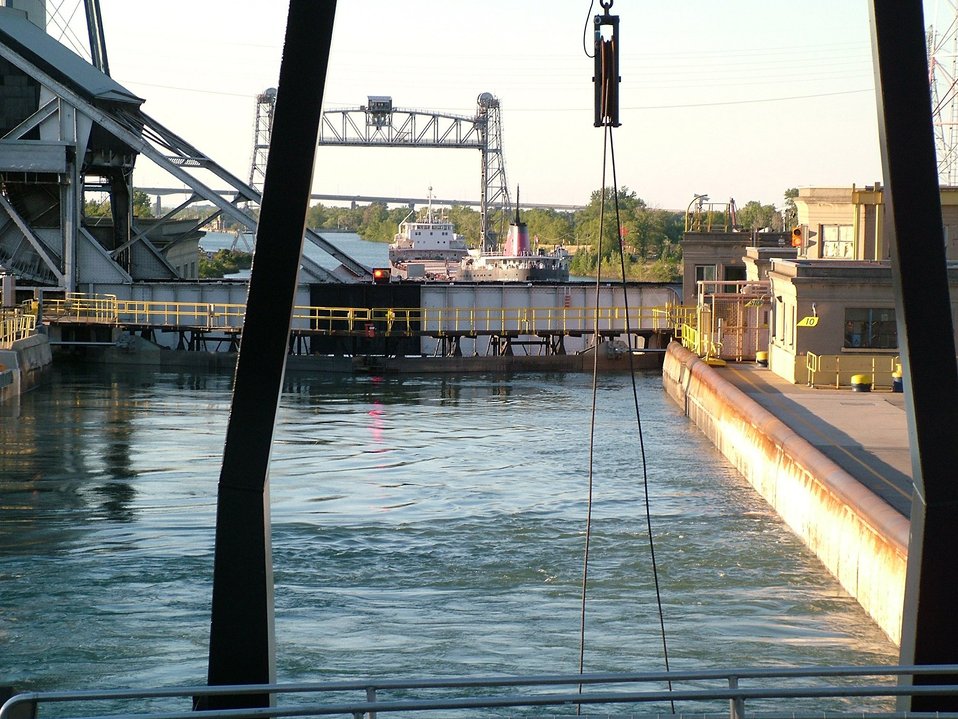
Locks on the Welland Canal. This canal bypasses Niagara Falls and facilitates shipping transportation between Lake Erie and Lake Ontario.